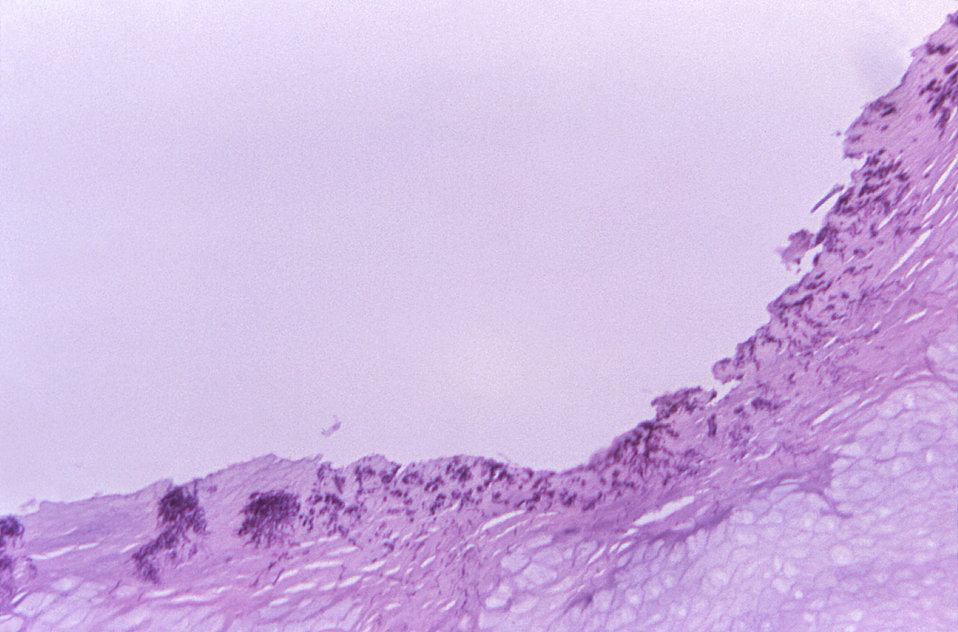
Using a PAS staining technique, this photomicrograph of a skin sample from the sole of a patient's foot, revealed histopathologic signs indicatine of Pitted Keratolysis due to a Gram-positive Dermatophilus sp. bacterial infection.